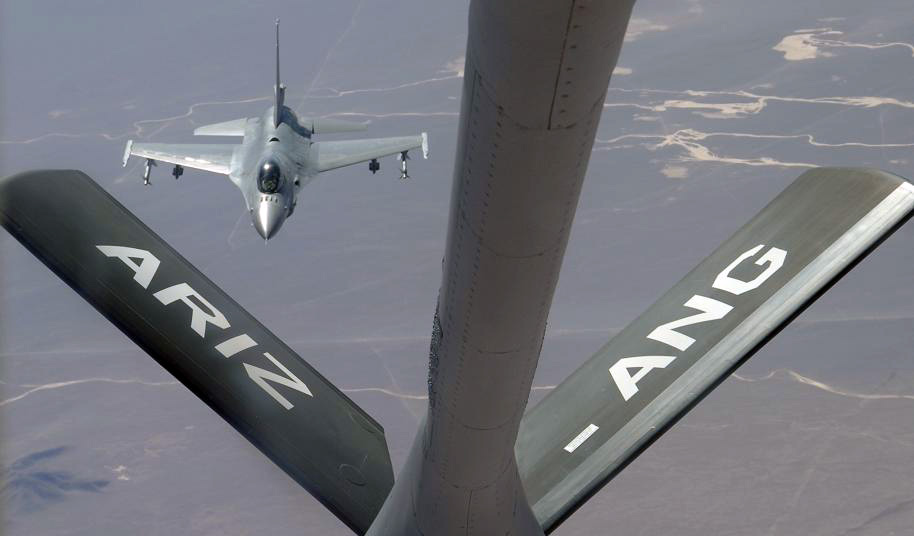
Tanker aircrews support exercise in Chile

A Chilean F-16 approaches the boom of a U.S. KC-135 Stratotanker during a refueling mission Oct. 22, 2009, over Chile. The Chilean air force hosted military members from the United States, Brazil, Argentina and France during Exercise Salitre II, a multinational exercise focused on interoperability.